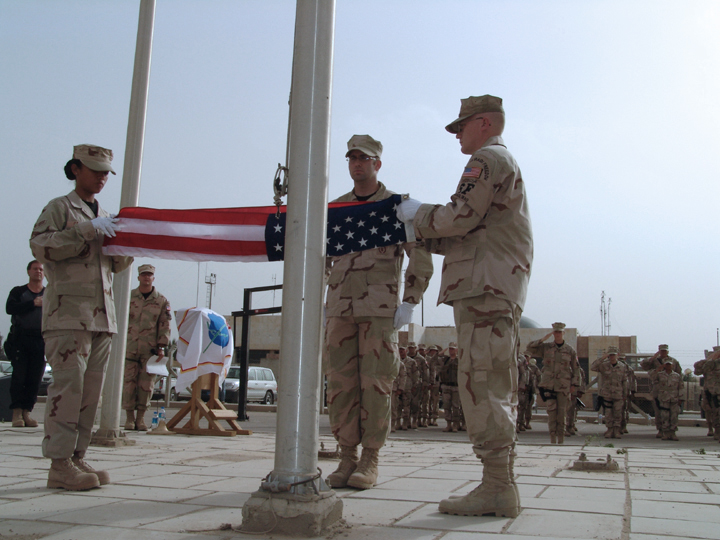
Deployed Airmen honor fallen police officers

BAGHDAD, Iraq - (From left) Airman 1st Class Ann Rachel Cajulis and Staff Sgts. Steven Callahan and Richard Dodson fold the flag in tribute to fallen security forces comrades during a ceremony here May 13 observing Peace Officers Memorial Day. The flag will be presented to the family of an Atlantic City police officer who was recently killed in the line of duty. The Airmen are assigned to the 447th Air Expeditionary Group's security forces flight. Airman Cajulis and Sergeant Callahan are deployed from Cannon Air Force Base, N.M., and Sergeant Dodson is deployed from Vance AFB, Okla.